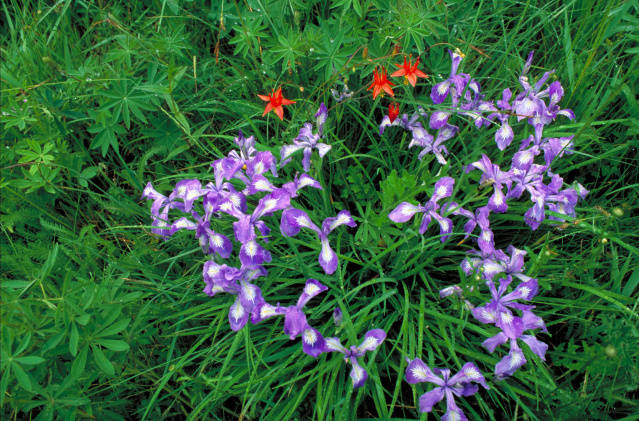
dwarf crested iris and crimson columbine